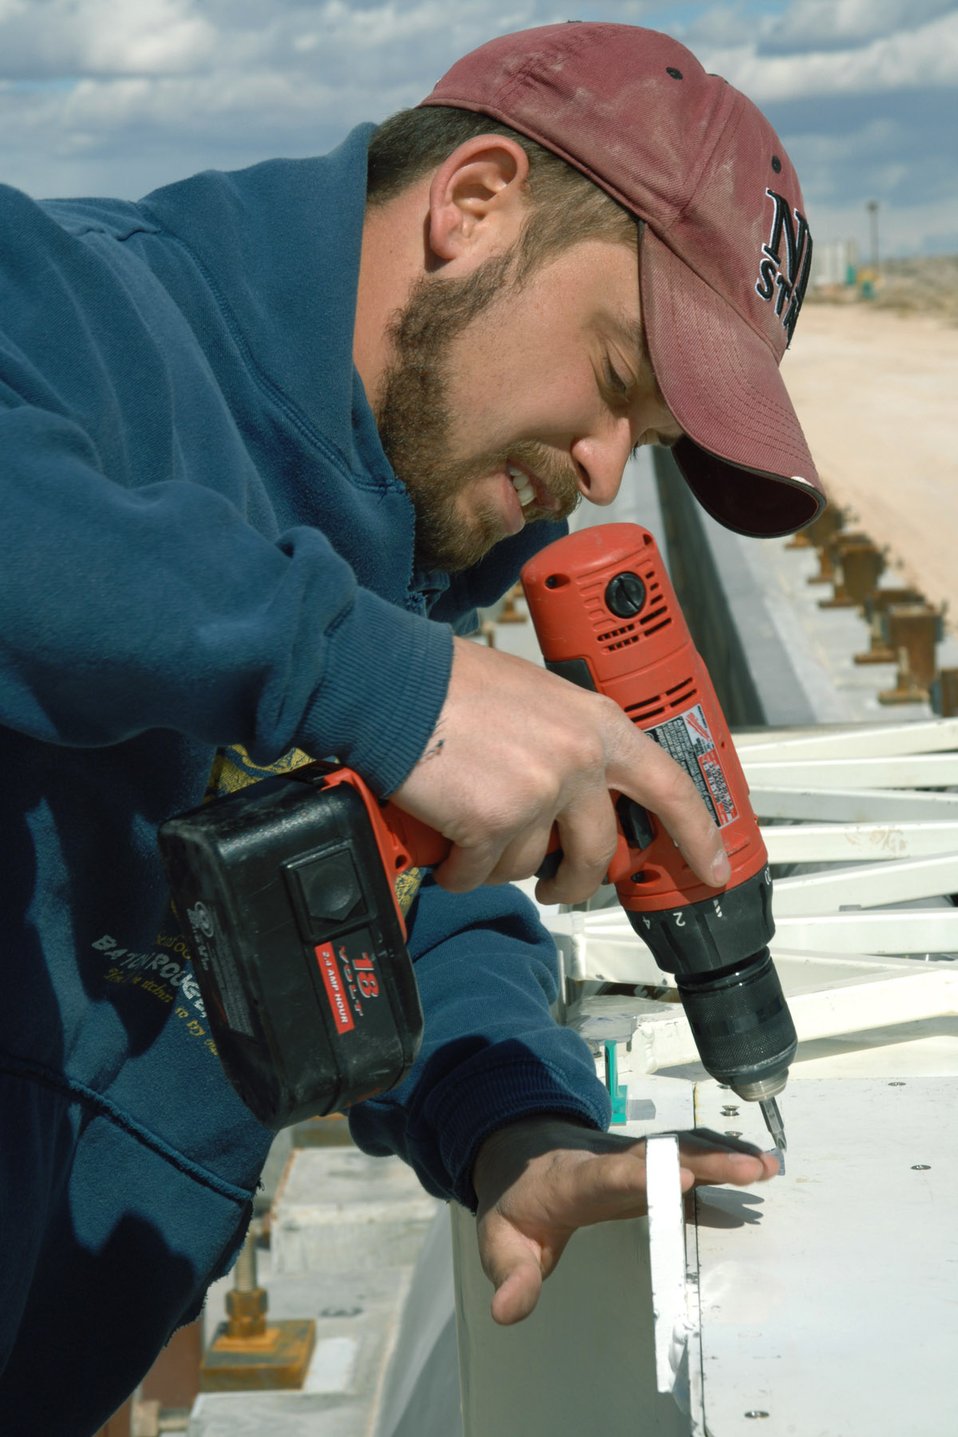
Test track

Greg Waterhouse removes top panel screws of a magnetically levitated rocket sled after a successful test Feb. 21at Holloman Air Force Base, N.M. Initial data stated the rocket sled reached a speed of 423 miles per hour, breaking the previous record of 361 miles per hour. Mr. Waterhouse is an electronics technician.